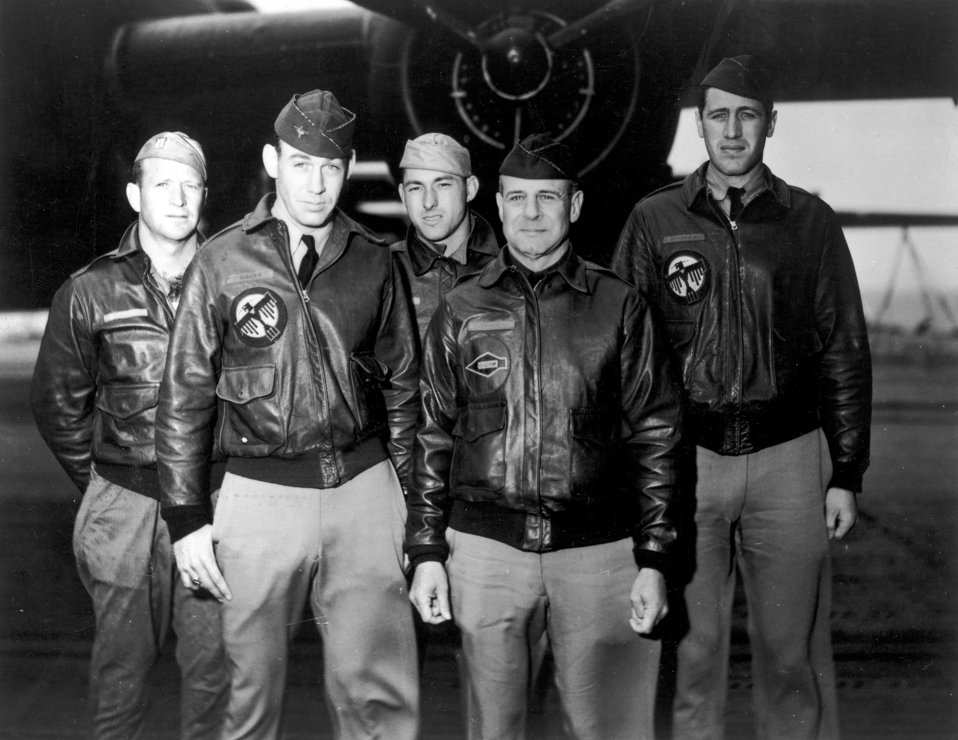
Tokoyo Fliers

On April 18, 1942, Airmen of the U.S. Army Air Forces, led by Lt. Col. James H. Doolittle , carried the battle of the Pacific to the heart of the Japanese empire with a surprising and daring raid on military targets at Tokoyo, Yokohama, Yokosuka, Nagoya and Kobe. This historic attack against these major cities was the result of coordination between the Army Air Forces and the U.S. Navy, which carried the 16 North American B-25 medium bombers aboard the carrier USS Hornet to within take-off distances of the Japanese Islands.